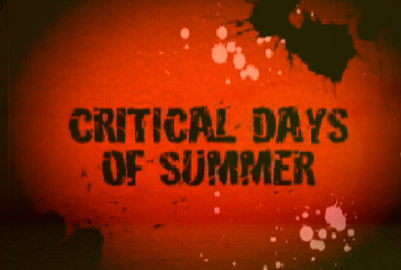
Critical Days of Summer videos aim to save Airmen's lives

The Air Force chief of staff and the Air Force top safety officer appear in videos to launch the service's annual Critical Days of Summer safety campaign, which begins May 22 and ends Sept. 7.